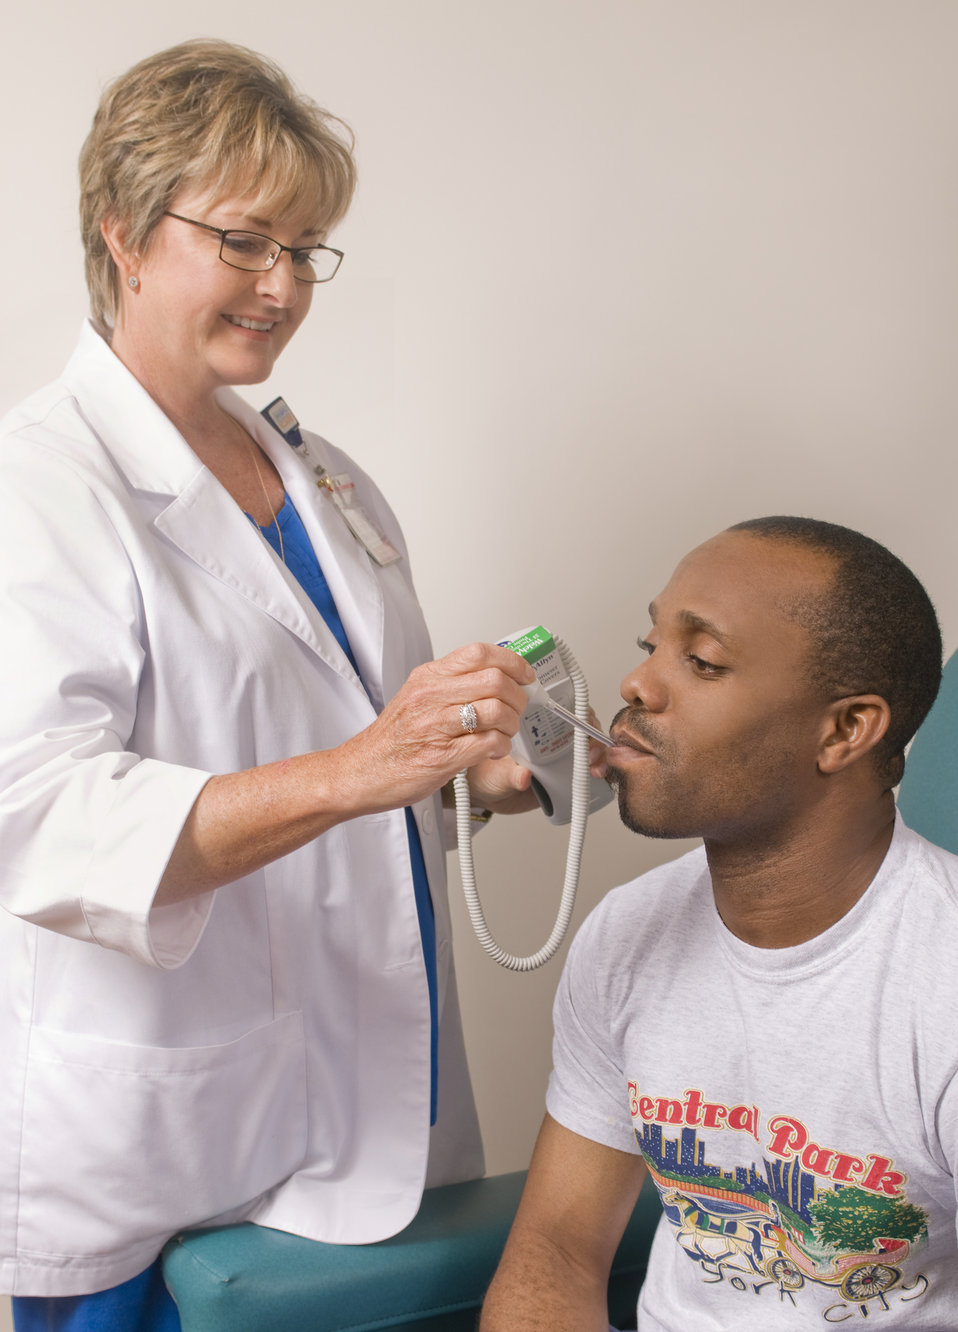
Seated in a clinical setting during his physical examination, this image depicts a male patient who was in the process of having his body temperature analyzed by a clinician using an orally-administered thermometer.